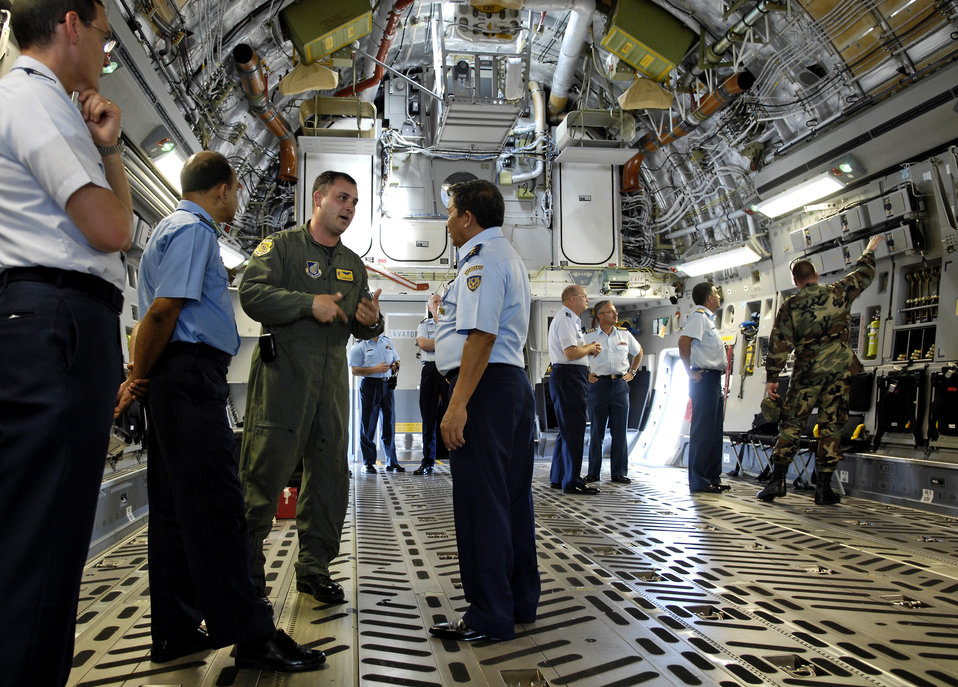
Pacific conference builds enlisted forces

Capt. Jason Ward discusses the C-17 Globemaster III capabilities with members of the Pacific Rim Airpower Symposium Sept. 20 at Hickam Air Force Base, Hawaii. The PACRIM Symposium, formerly the PACRIM Director of Operations Conference, brought together representatives from Australia, Bangladesh, Brunei, Canada, India, Indonesia, Japan, Malaysia, Mongolia, Nepal, New Zealand, Philippines, South Korea, Singapore, Sri Lanka, Thailand, and the United States. Capt. Ward is a pilot with the 535th Airlift Squadron.